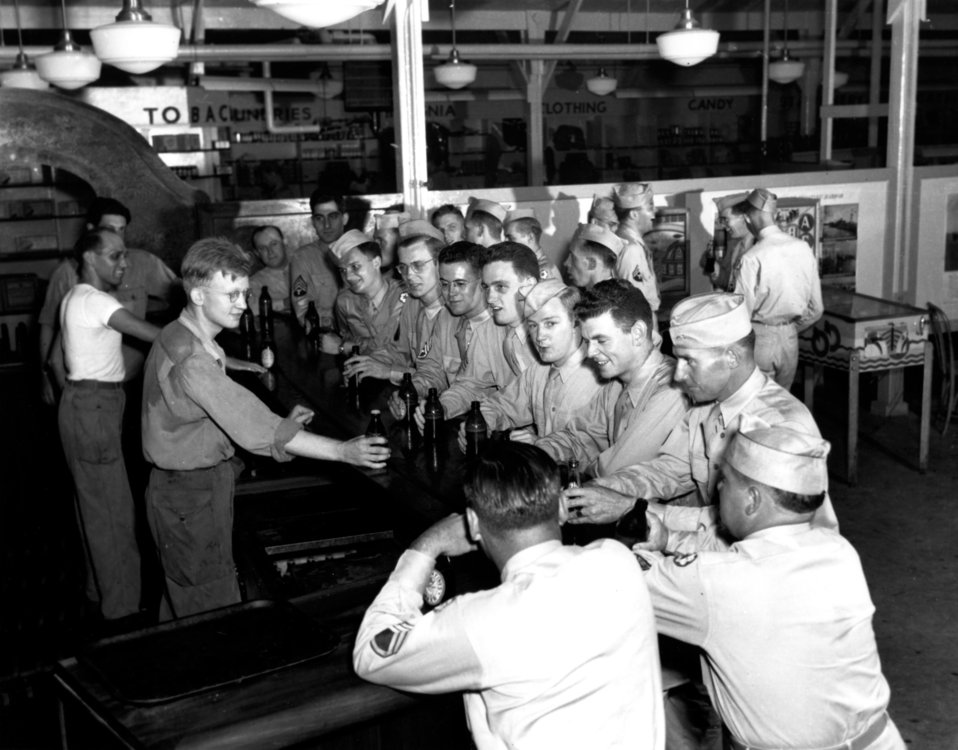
Army Activity at Oak Ridge